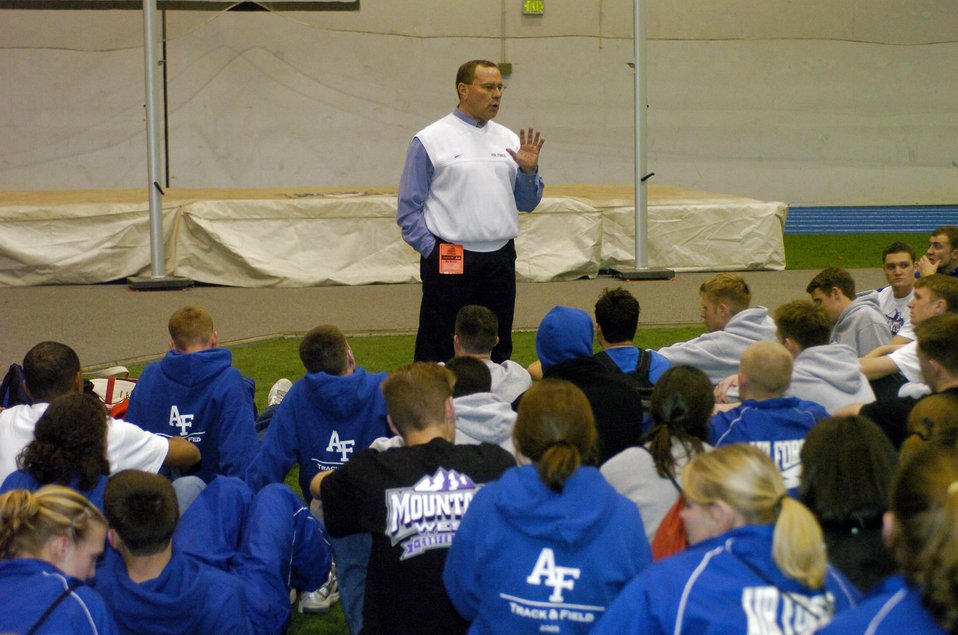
Academy track coach inducted into hall of fame

Air Force Academy track and field head coach Ralph Lindeman addresses the team during a track meet. Mr. Lindeman was inducted into the Arizona Track and Cross Country Coaches Hall of Fame Jan. 9 in Glendale, Ariz.